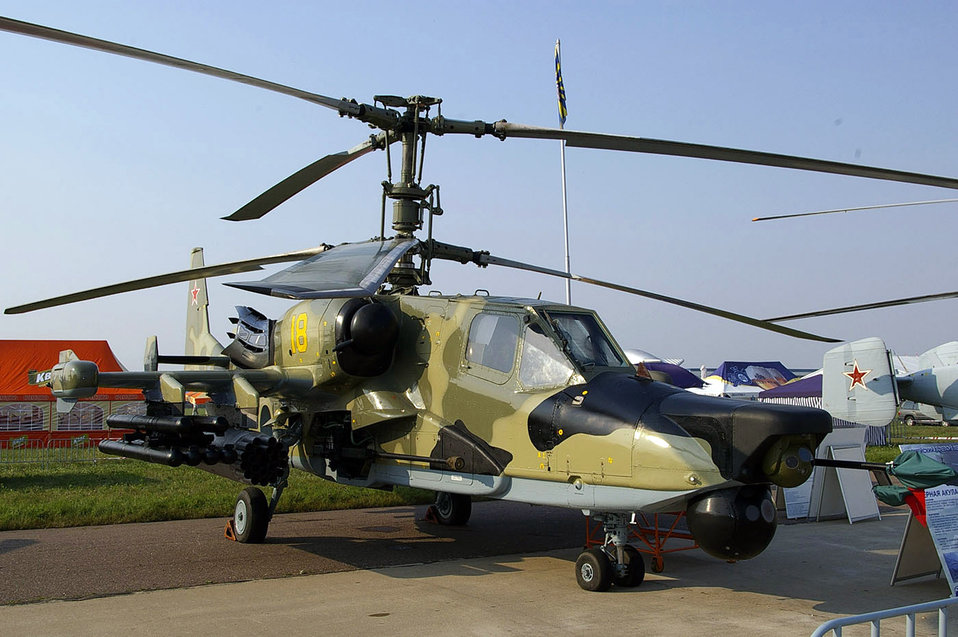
Airmen participate in Moscow International Air Show

A Russian helicopter is on display on the opening day of the Moscow International Air Show Aug. 21 at Ramenskoye Airfield in Zhukovsky, Russia. The air show runs through Aug. 26 and includes Department of Defense participation of static displays and aerial flight demonstrations. The air show is one of the premier events of its type in the world. About 65 Airmen from bases worldwide are participating in this year's air show.